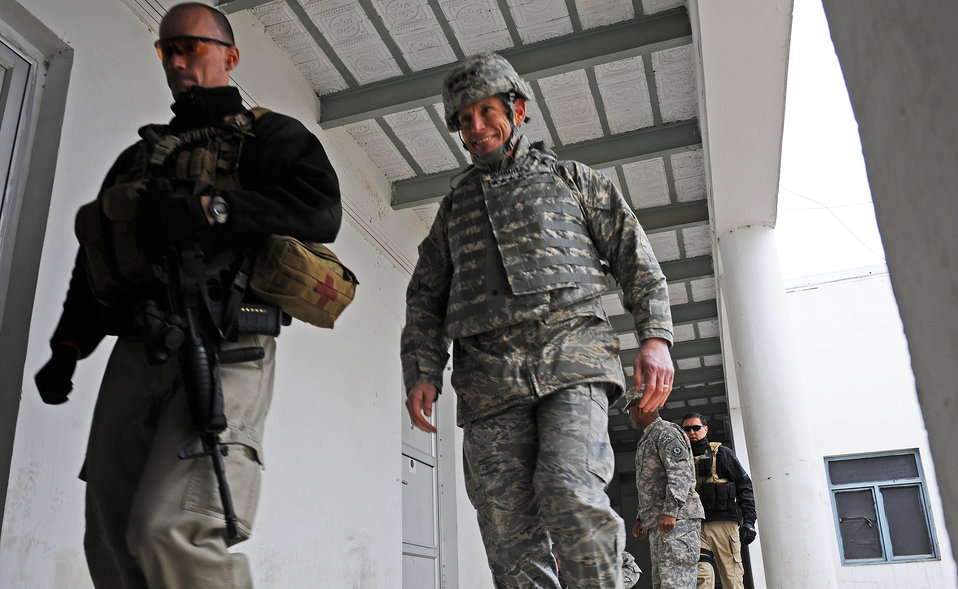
Air Force Chief of Staff visits PRT Zabul

Air Force Chief of Staff Gen. Norton Schwartz walks through the main military quarters of Provincial Reconstruction Team Zabul Jan. 20, 2011, during a visit to Forward Operating Base Smart, Afghanistan. The visit was part of the general's trip to the U.S. Central Command area of responsibility.